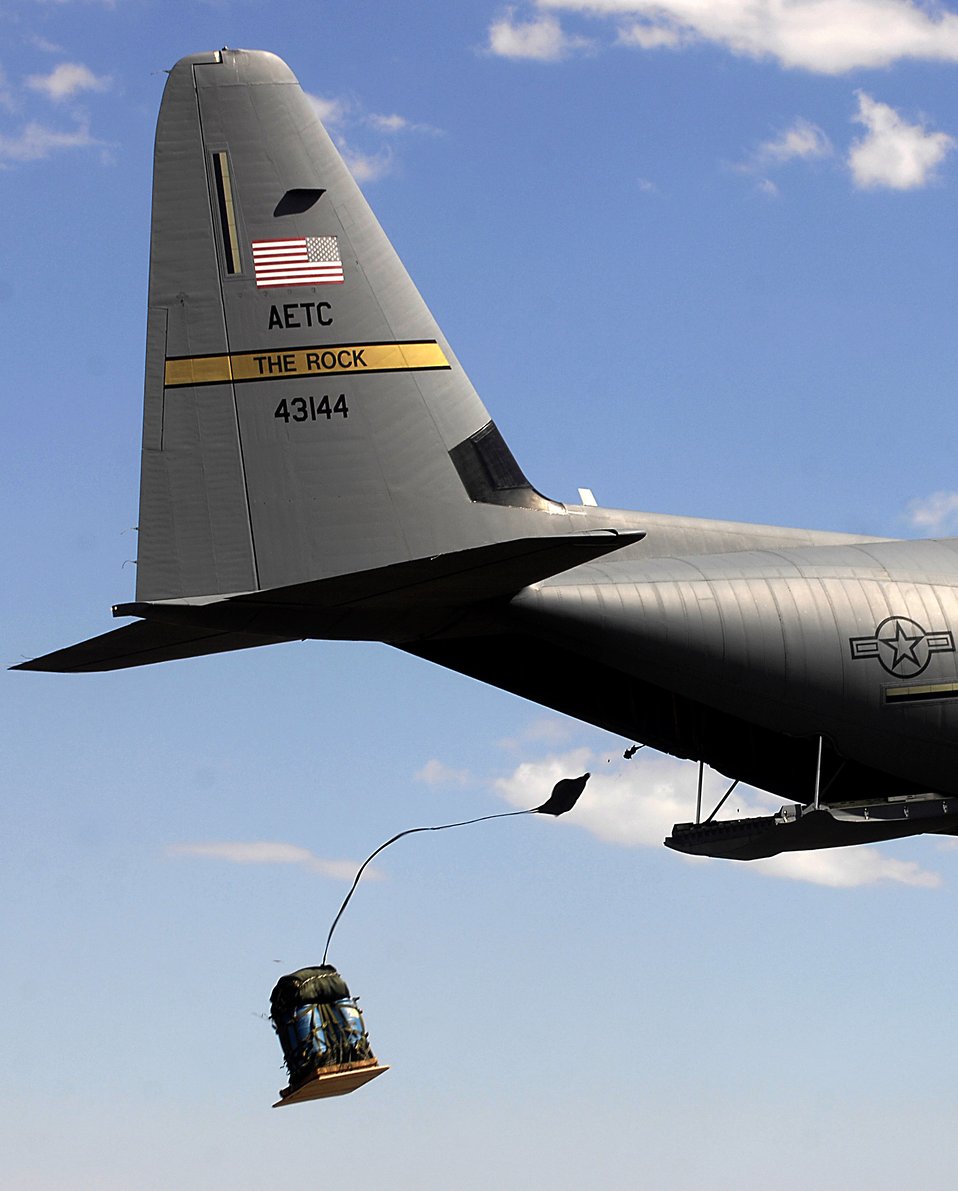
Air drop

A C-130J Hercules from the 314th Airlift Wing at Little Rock Air Force Base, Ark., competes in the air drop competition for Air Mobility Rodeo 2007 by dropping pallets on targets July 23. Rodeo is a readiness competition for U.S. and international mobility air forces.